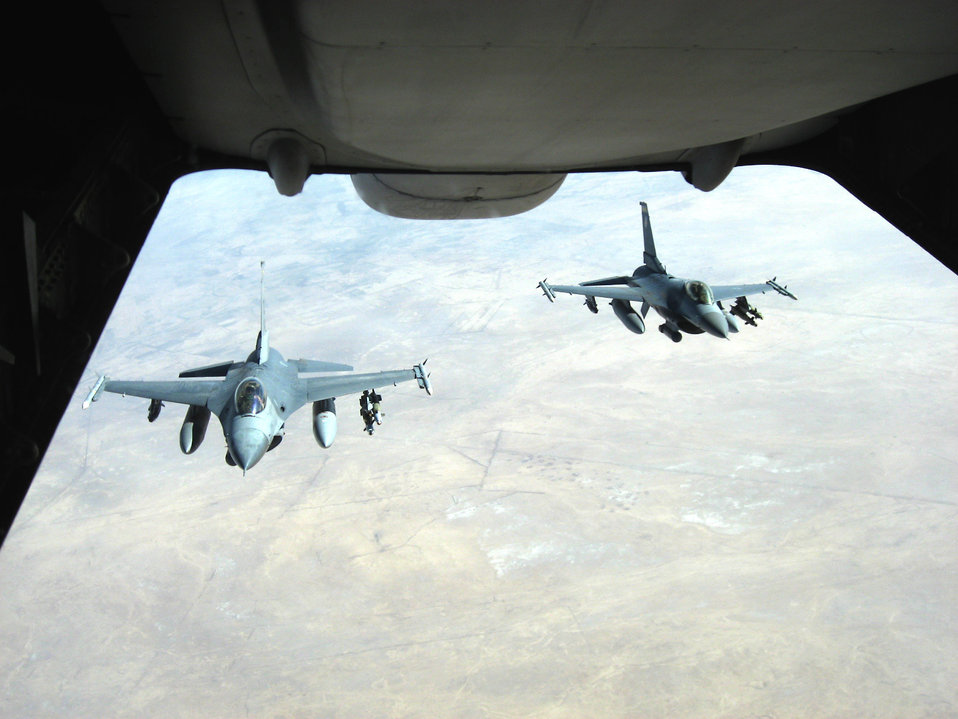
Refueling the fight

Two F-16 Fighting Falcons from Balad Air Base, Iraq, pull behind a KC-10 Extender to receive fuel before conducting a mission over Iraq Nov. 20. The KC-10 refueled both jets that afternoon in support of Operation Iraqi Freedom. The KC-10 aircrew is deployed in support of the 380th Air Expeditionary Wing.